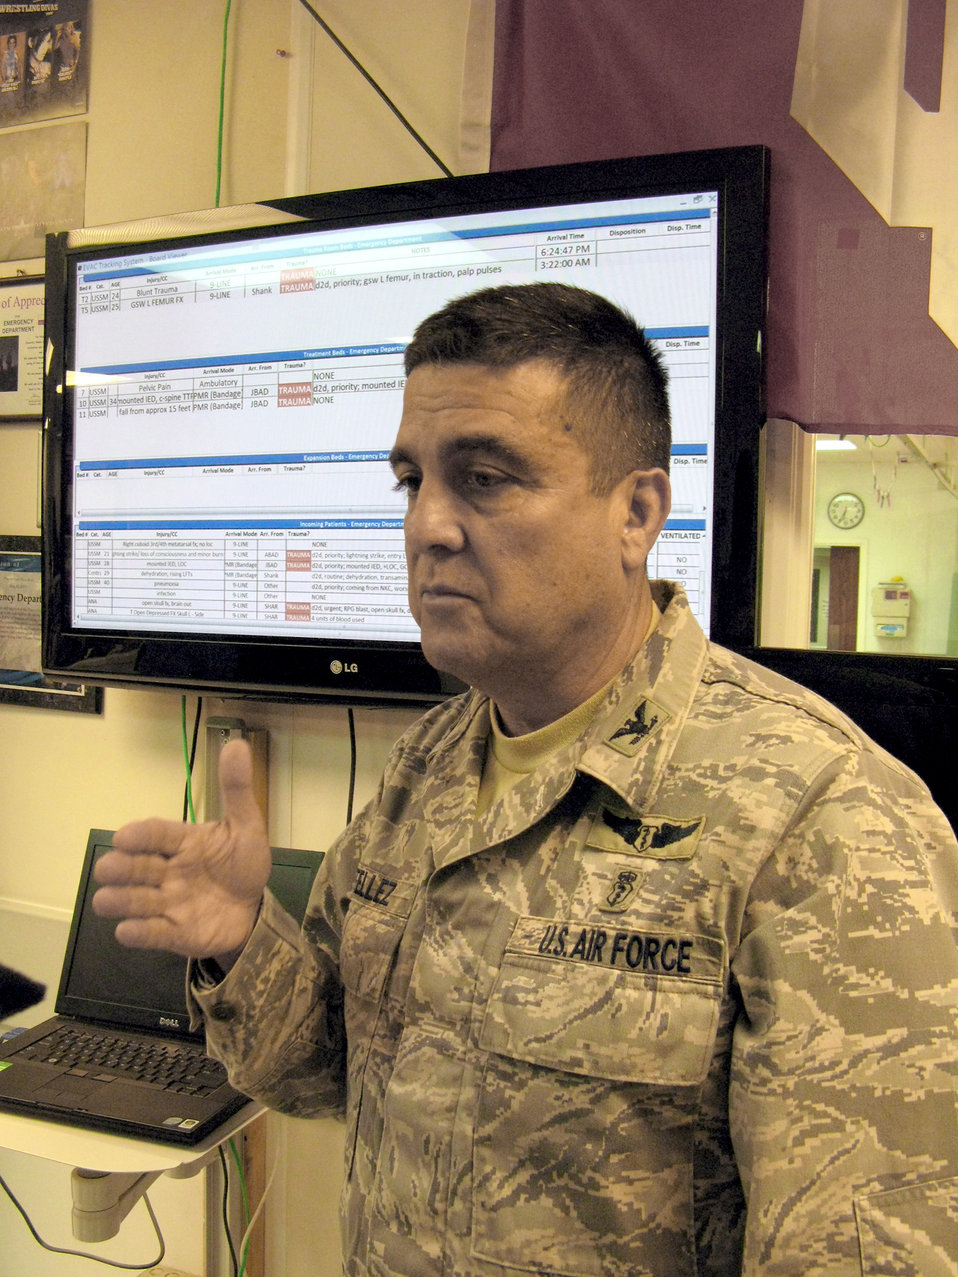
Registry yields life-saving treatment lessons

Lt. Col. (Dr.) Guillermo Tellez said lessons learned through the Joint Theater Trauma Registry are saving lives of trauma patients arriving regularly at the hospital, the largest aeromedical evacuation point in Afghanistan. Colonel Tellez is the commander of the Staff Sgt. Heathe N. Craig Joint Theater Hospital at Bagram Airfield, Afghanistan.